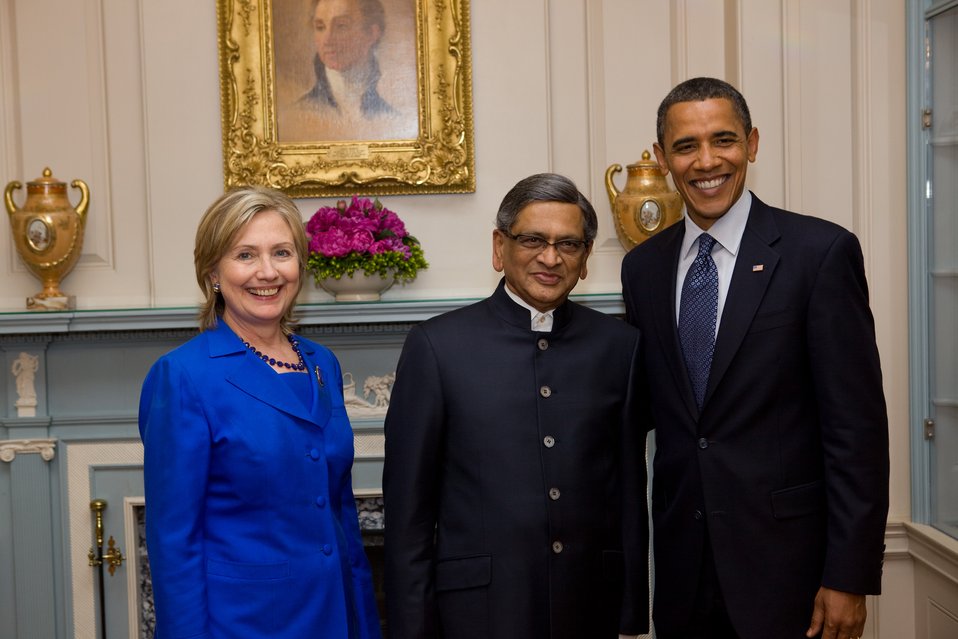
Secretary Clinton, Indian Minister of External Affairs S.M. Krishna, and President Obama Pose for Photo

U.S. Secretary of State Hillary Rodham Clinton, U.S. President Barack Obama, and Indian Minister of External Affairs S.M. Krishna pose for a photo at the U.S.-India Strategic Dialogue reception at the the U.S. Department of State in Washington, D.C., on June 3, 2010.